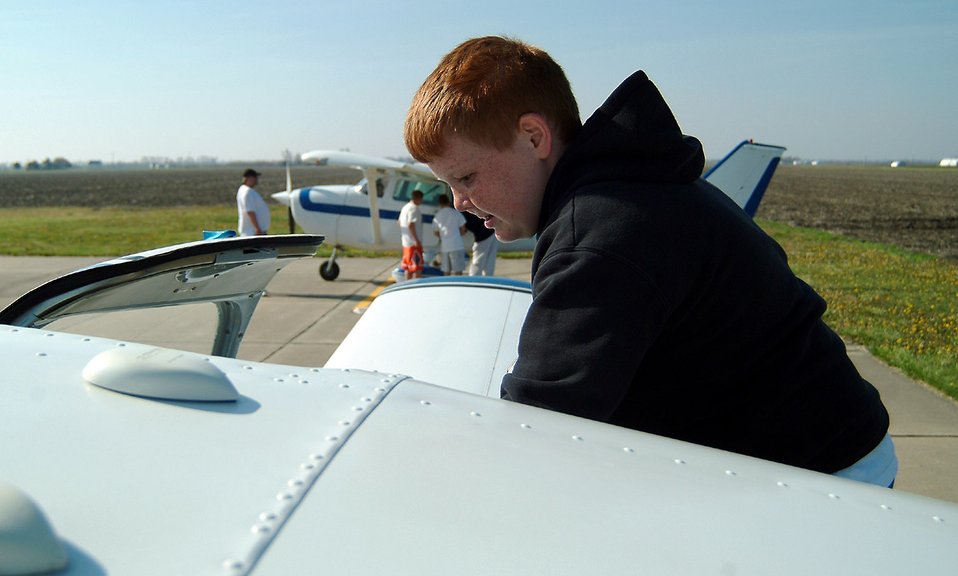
Wright Flight program takes youths to new heights

As a reward for successful completion of the 442nd Fighter Wing-sponsored Wright Flight mentoring program, Rory McGraw, a sixth-grade student at Hardin Central School in Hardin, Mo., climbs into an airplane for his flight over central Missouri at the culmination of this year's Wright Flight program. Area private pilots provided the flights to the students for free during the Wright Flight fly day April 21 at the airport in Carrollton, Mo. The 442nd FW is an Air Force Reserve Command A-10 Thunderbolt II fighter unit based at Whiteman Air Force Base, Mo.